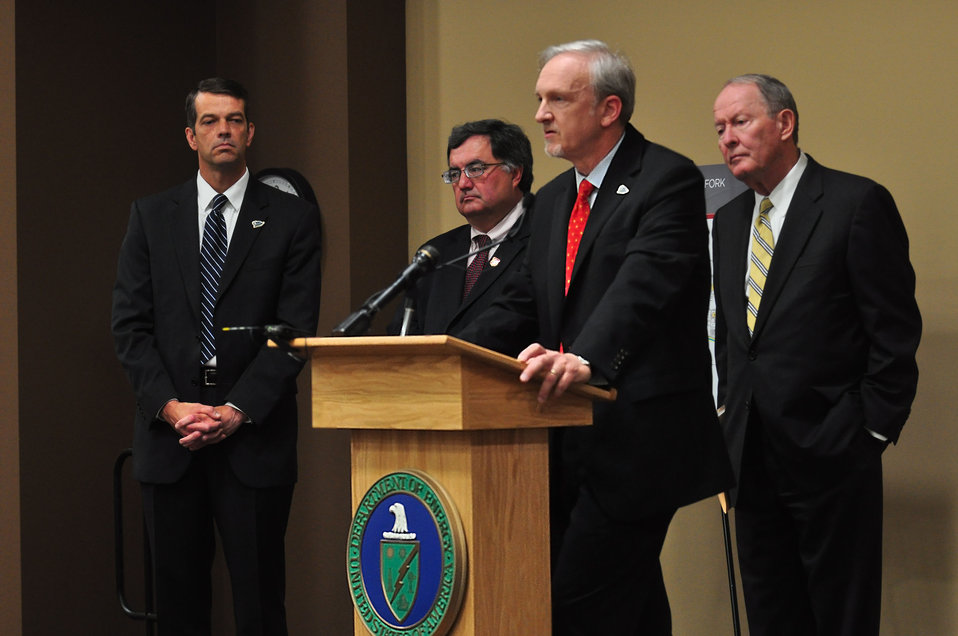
Mercury Cleanup Press Conference Y-12 Oak Ridge Speaking Dave Huizenga EM Senior Advisor

13-051 DOE photo Lynn Freeny 5-3-2013 left to right Oak Ridge EM Manager Mark Whitney,Tennessee Department of Environment and Conservation Commissioner Robert Martineau, EM Senior Advisor Dave Huizenga,U.S. Sen. Lamar Alexander (R-Tenn.) Oak Ridge Tennessee